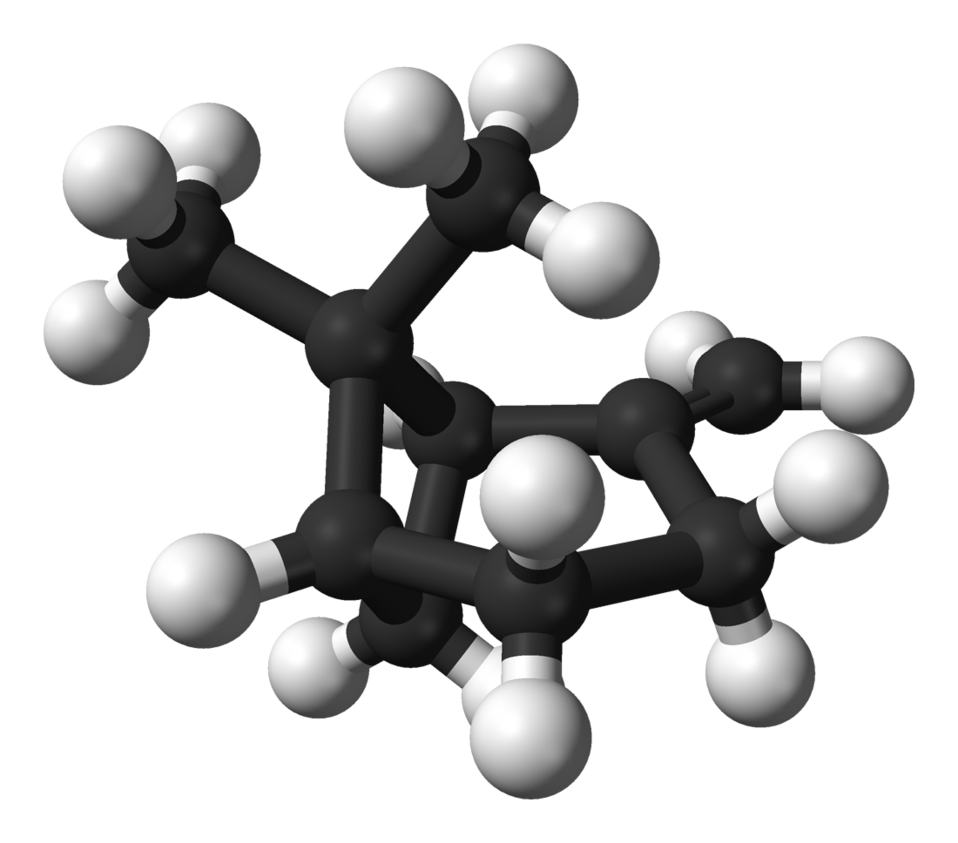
Ball-and-stick model of the (−)-β-pinene molecule